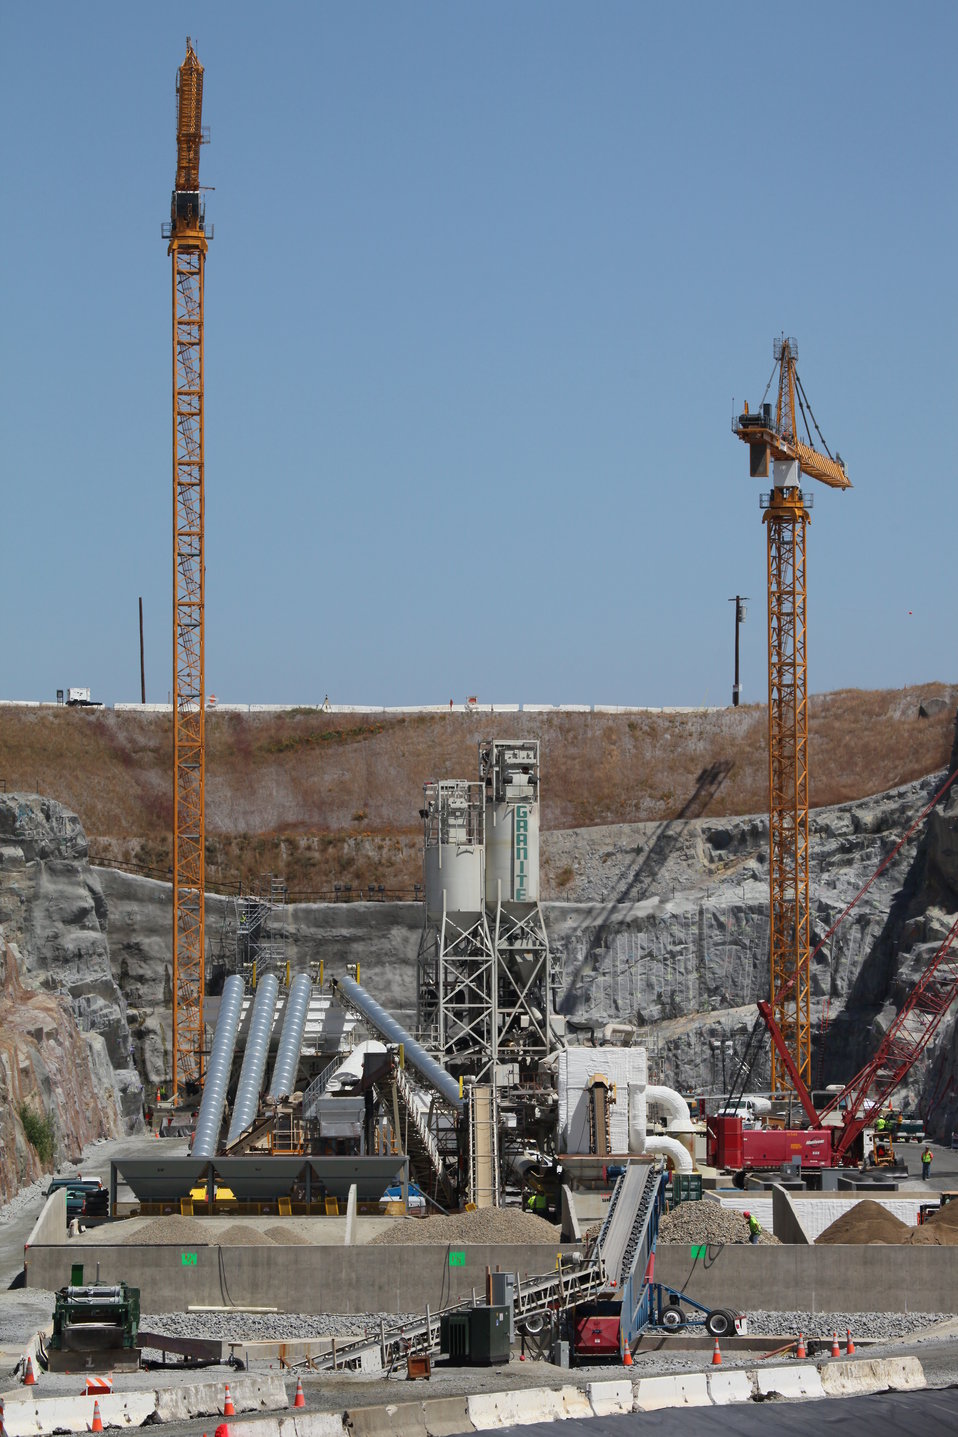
Cranes erected at the Folsom auxiliary spillway

Two tower cranes, erected by contractors for the U.S. Army Corps of Engineers Sacramento District, stand tall at the construction site for the Folsom Dam auxiliary spillway in Folsom, Calif., May 10, 2012. The concrete batch plant can be seen in the foreground. A total of three cranes will be used in lifting form work, rebar and concrete in constructing the spillway starting later in May. The Sacramento District has shifted its focus to construction of the spillway's control structure, which is essentially a second dam. The spillway is scheduled to be ready for use in 2017 and will allow Folsom Dam to release water sooner and more safely, helping reduce flood risk for the Sacramento region.